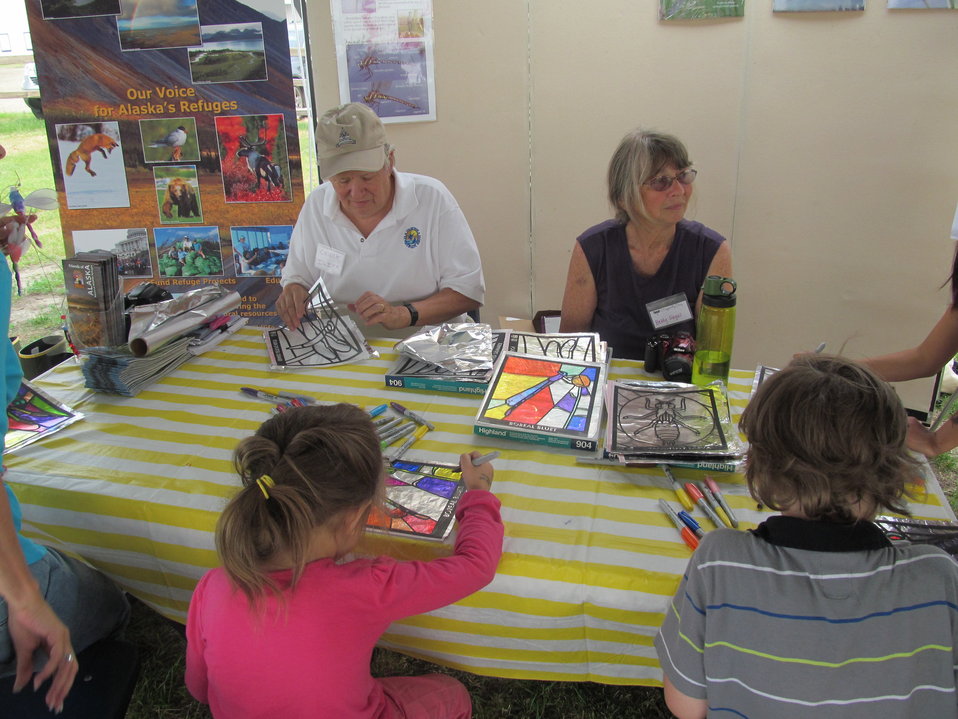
Friends of Alaska NWR booth

(USFWS)